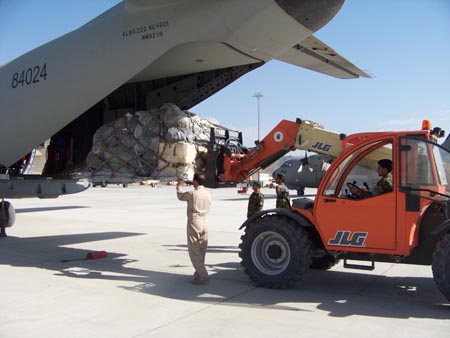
Airmen mentor Afghan porters at Kabul

Afghan National Army Air Force soldier Inudin Safi loads a cargo pallet on a C-27A Spartan June 8, 2010, at the Afghan National Army Air Force base in Kabul, Afghanistan